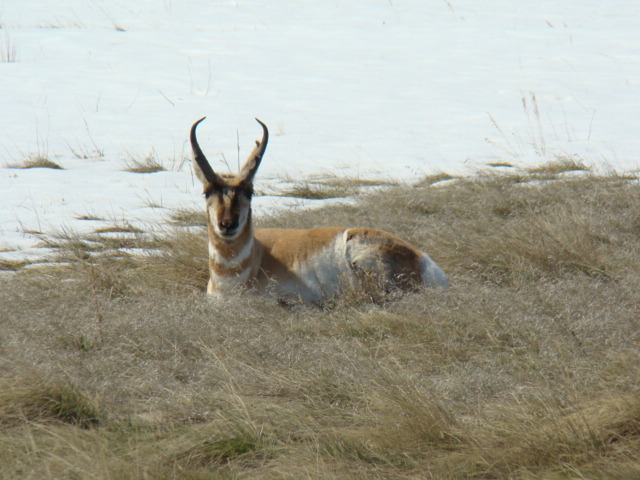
Pronghorn

A Pronghorn rests in a dry patch of prarie grass. Although pronghorn are occasionally seen on the Refuge they are not as commonly seen as White-tailed Deer.